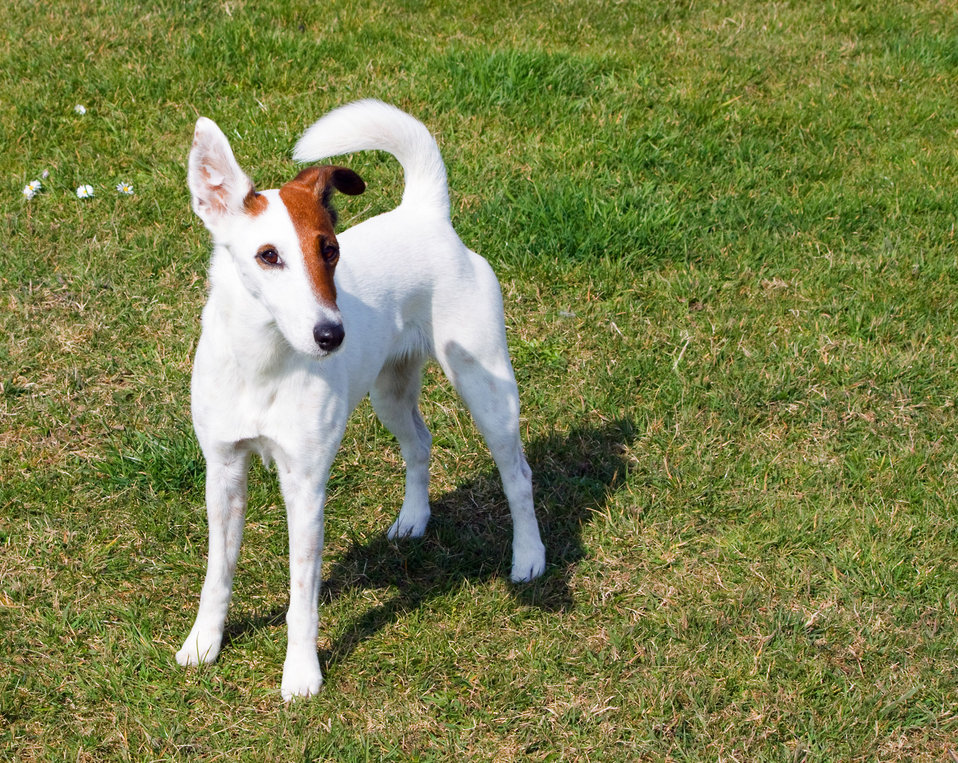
Smooth fox terrier dog

Beautiful portrait of a cute little smooth fox terrier dog standing on the green grass.